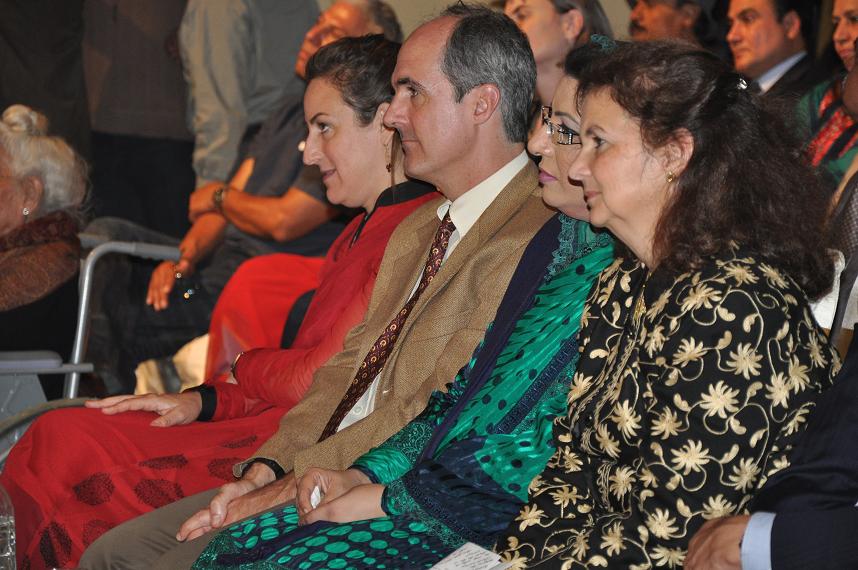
Teg Gehr, Dr. Firdous Ashiq and U.S. CG